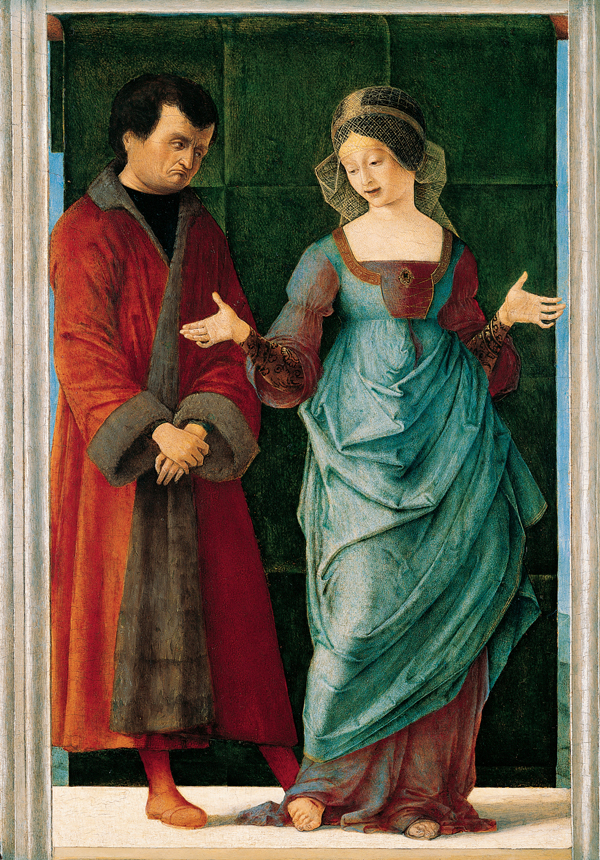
'Portia and Brutus', painting on panel by Ercole de’ Roberti